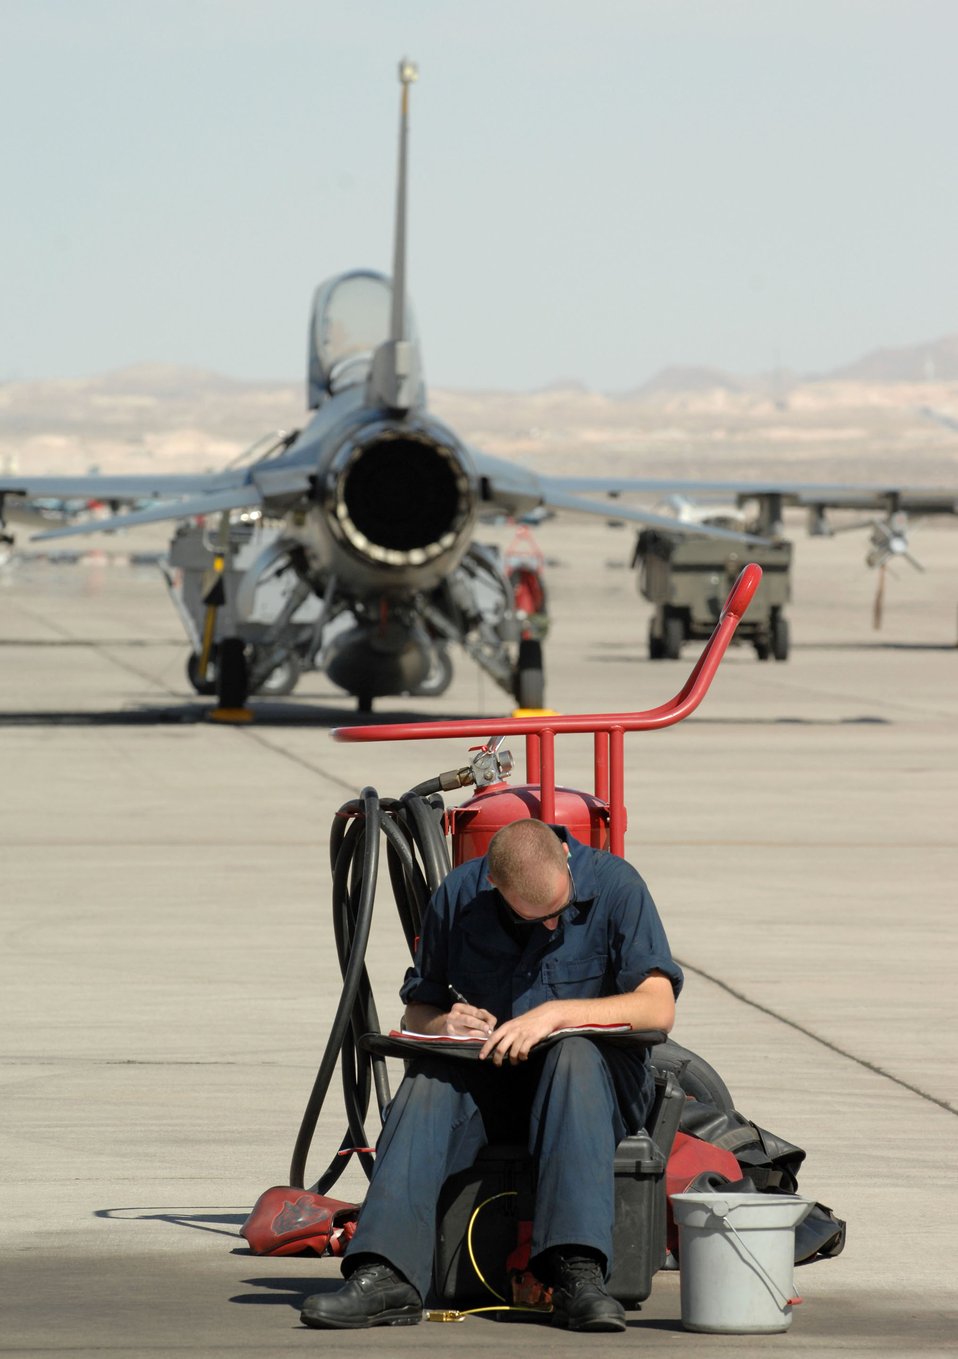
Falcons support Eagle school

Airman 1st Class Andrew Davis reviews F-16 Fighting Falcon post flight inspection forms Oct. 18 at Nellis Air Force Base, Nev. Airman Davis is a 63rd Fighter Squadron crew chief from Luke AFB, Ariz. The 63rd FS is at Nellis AFB supporting the F-15 Eagle Weapons School Instructor Course in an adversary tactics role.